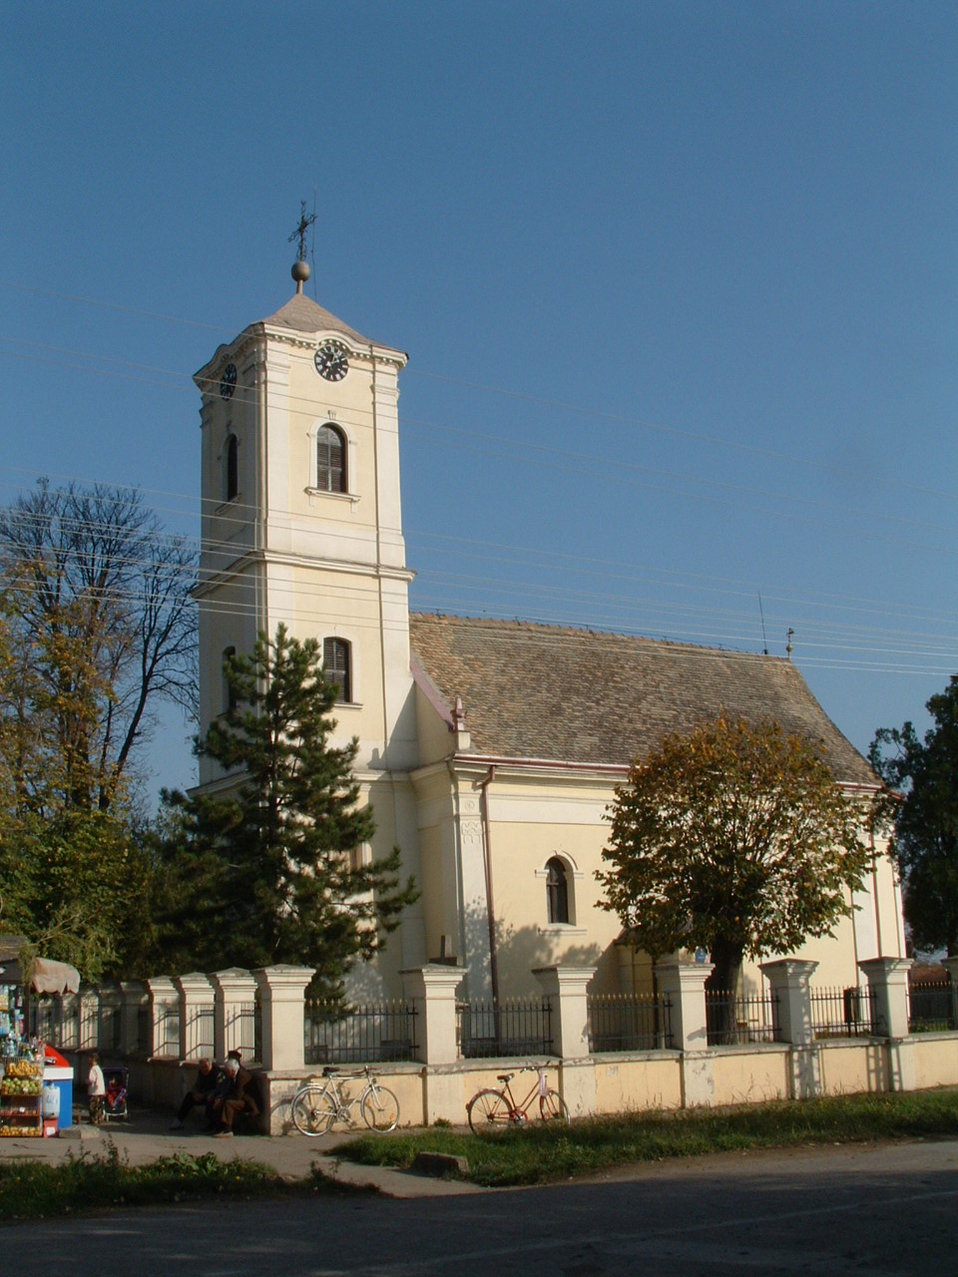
Српски / srpski: Црква у Великим Радинцима Veliki Radinci - Chruch